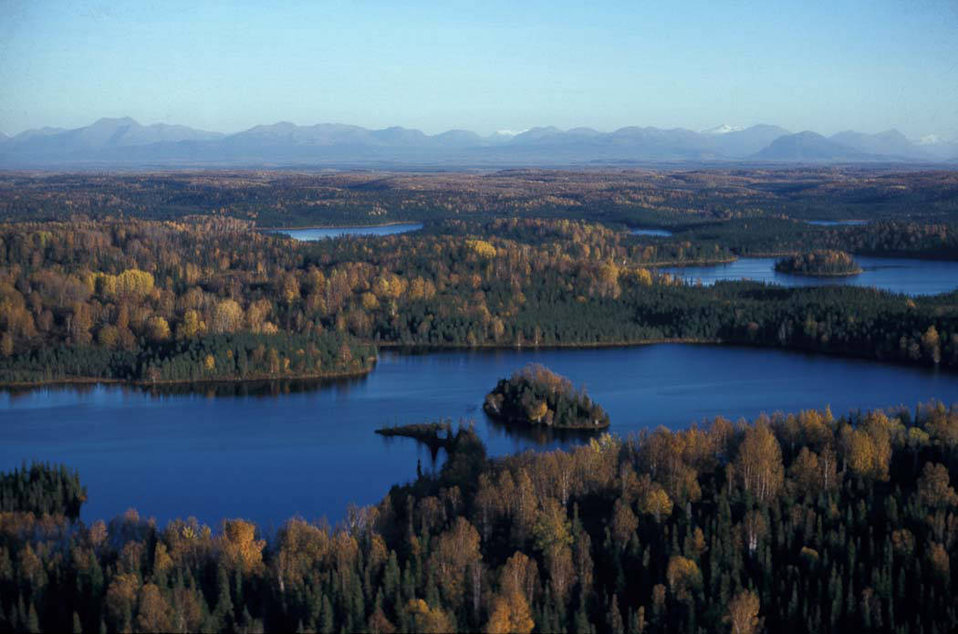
Kenai Refuge Lakes

Photo credit: USFWS/Spencer

On Alaska’s seven million-acre Kenai Peninsula, warmer temperatures have increased overwinter survival and boosted populations of spruce bark beetle, enabling the pest to devastate four million acres of forest on the peninsula and south-central Alaska over a 15-year period